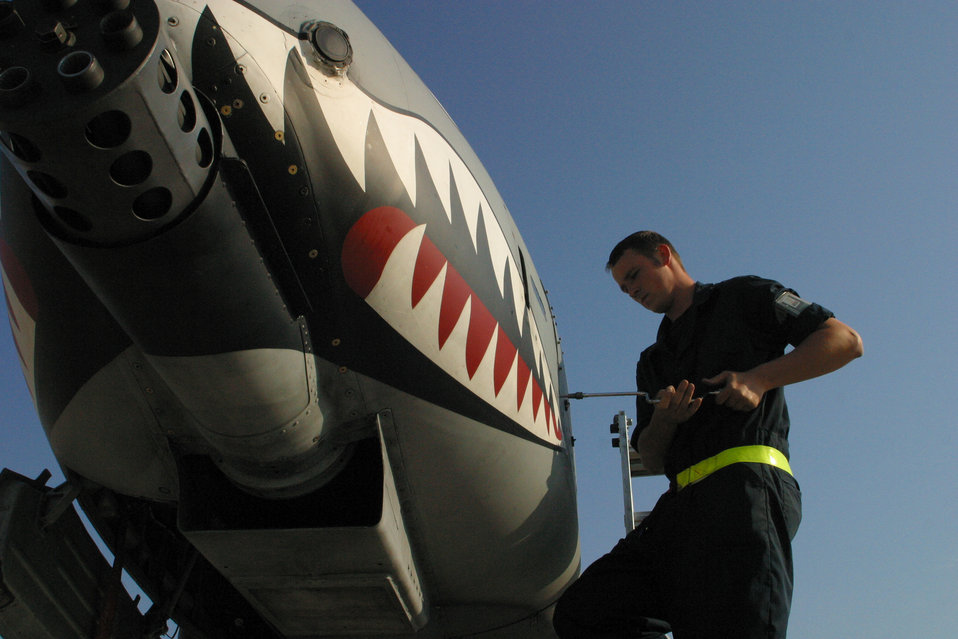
Preparing to deploy

POPE AIR FORCE BASE, N.C. -- Airman 1st Class Justin Cockburn fastens a panel after replacing a battery on an A-10 Thunderbolt II here May 4. More than 200 Airmen from the 74th Fighter Squadron are preparing to deploy to Afghanistan supporting Operation Enduring Freedom. Airman Cockburn is an A-10 crew chief assigned to the 23rd Aircraft Maintenance Squadron.